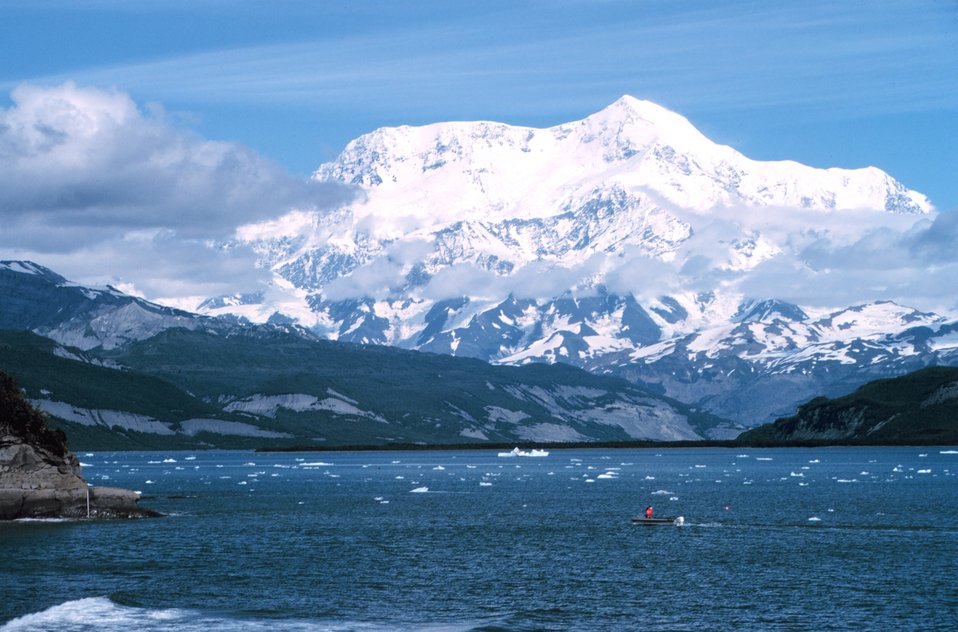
Photo #8 of Mount St. Elias sequence. Mount Saint Elias is one of the largest mountains visible from the sea on the North American continent. It rises to a height of 18,008 feet in a distance of less than 20 miles from sea level at Icy Bay.